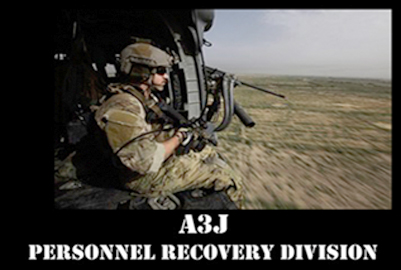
Personnel recovery division

Air Combat Command's Personnel Recovery Division, A3J, officially stood up, Dec. 1, 2010.